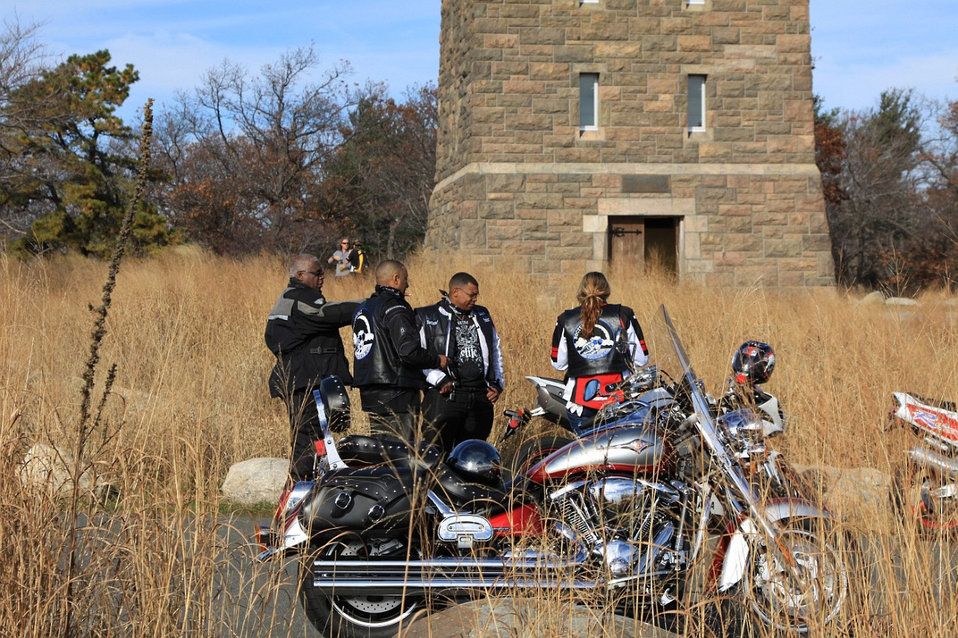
Motorcycle club

Coffee break on the road.